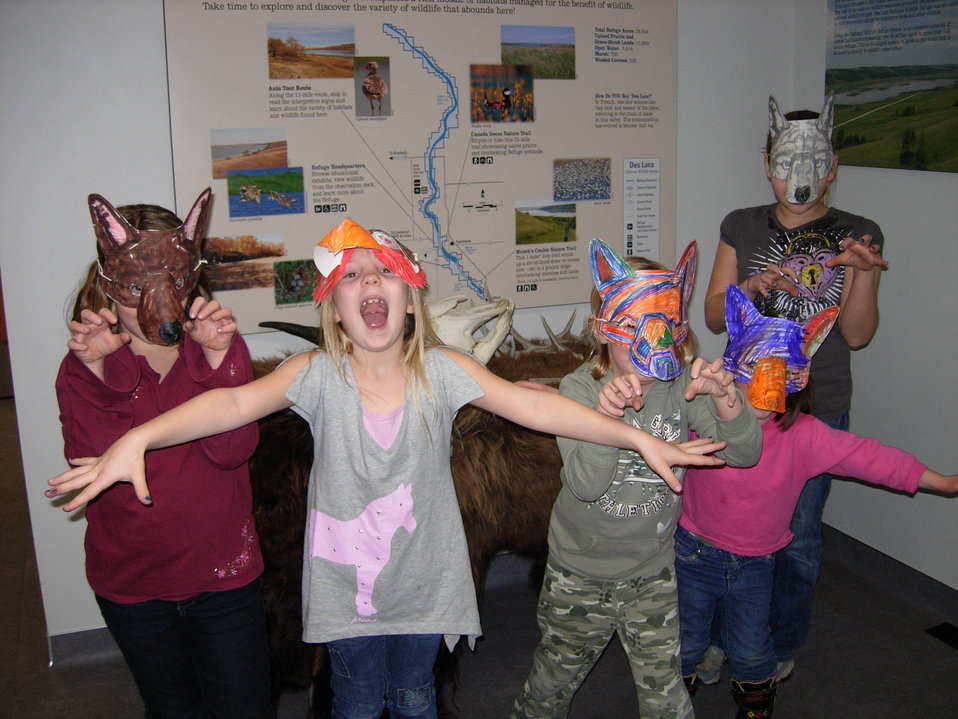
Des Lacs National Wildlife Refuge

Crazy Creatures! These children proudly display the creature masks they made during Des Lacs National Wildlife Refuge's 75th birthday celebration.